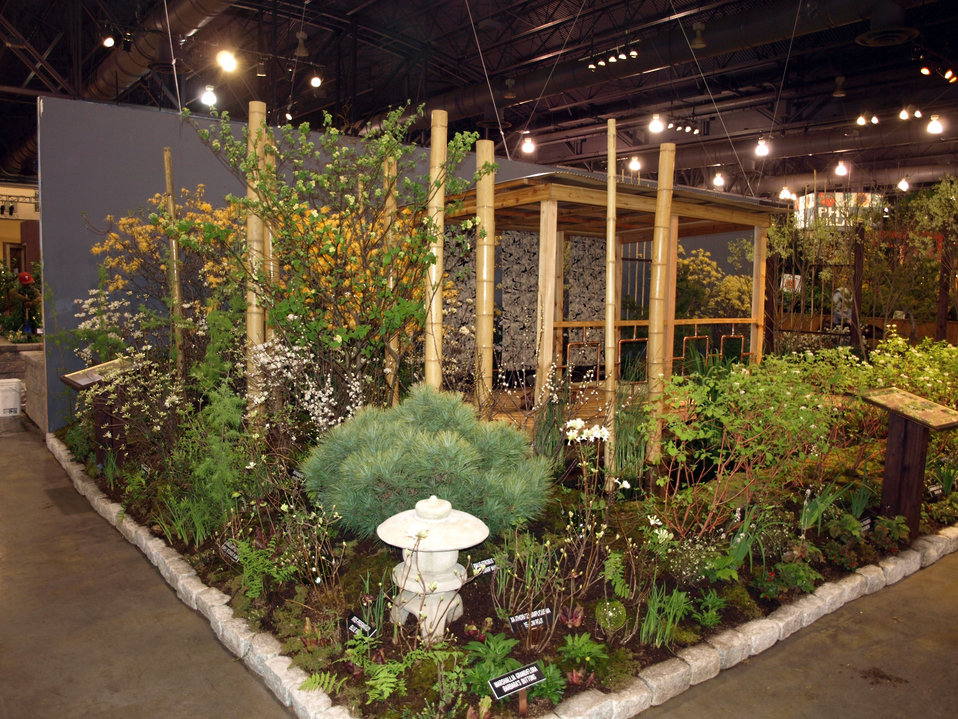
EPA’s 2010 Philadelphia Flower Show Exhibit – left side

The 2010 exhibit viewed from the left side

Learn more about EPA’s Exhibit at the 2010 Philadelphia International Flower Show:
www.epa.gov/reg3esd1/garden/flower show.htm
www.epa.gov/reg3esd1/garden/flower show plants.htm
www.epa.gov/reg3esd1/garden/pdf/flowershow2010.pdf (6 pp, 864K)